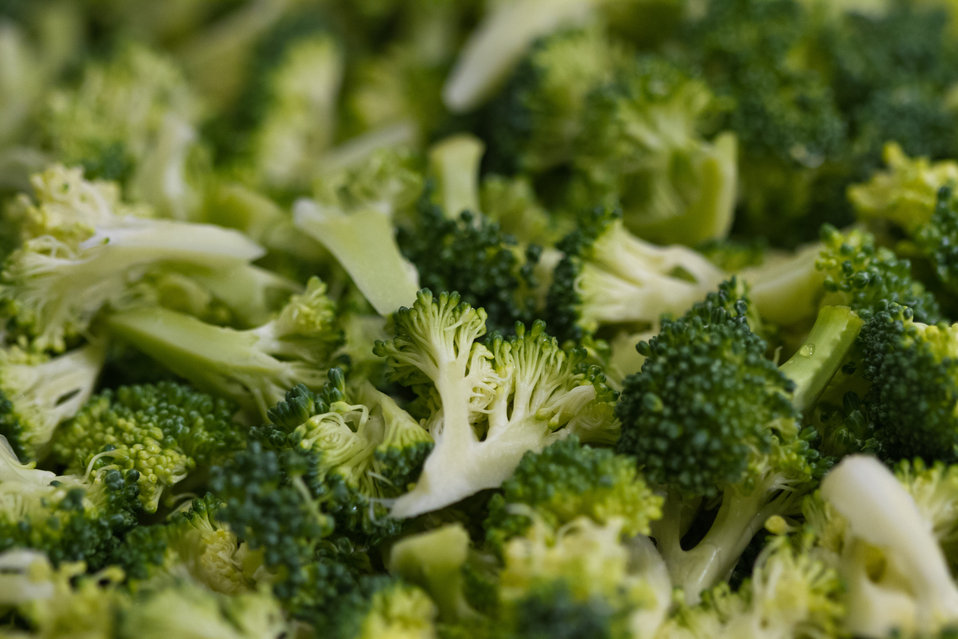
Washed and quartered broccoli sit ready to be mixed for sunny broccoli and cauliflower toss are portioned for more than 50 students from the 5th grade classes at Yorkshire Elementary School in Manassas, VA., participated in a taste testing of the new school lunch menu created to meet the new standards. Students tested a sample menu of black-bean filled pizza, pineapple spear, plantain, sunny broccoli and cauliflower toss, and an apple and celery cup with sunbutter dip (a peanut butter substitution), on Wednesday, September 5, 2012.